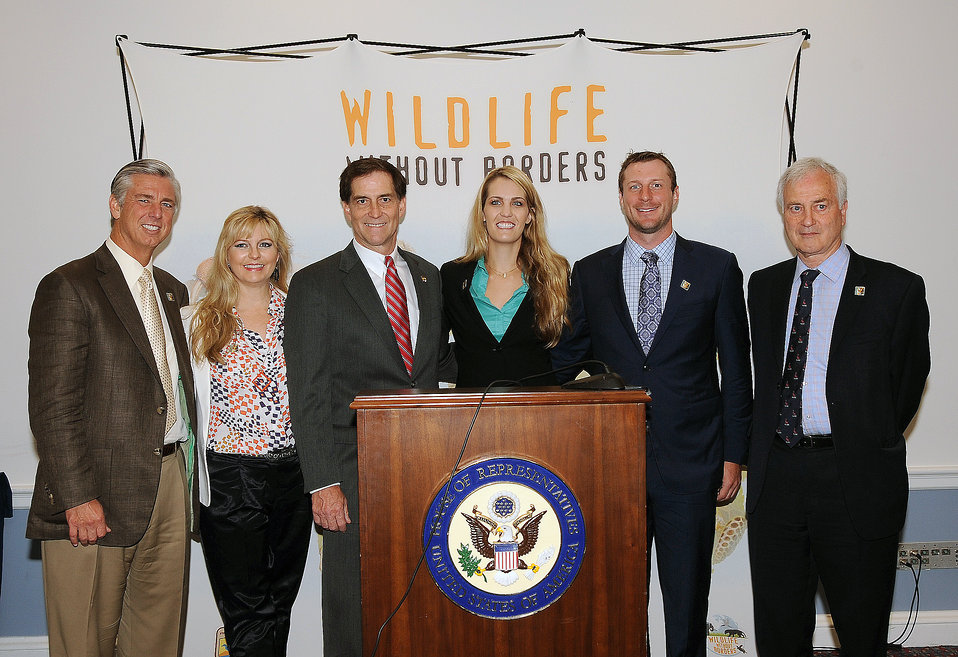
Save Vanishing Species on Capitol Hill

Dave Dombrowski, Karie Ross, Dan Ashe, Erica May, Max Scherzer, Herb Raffaele